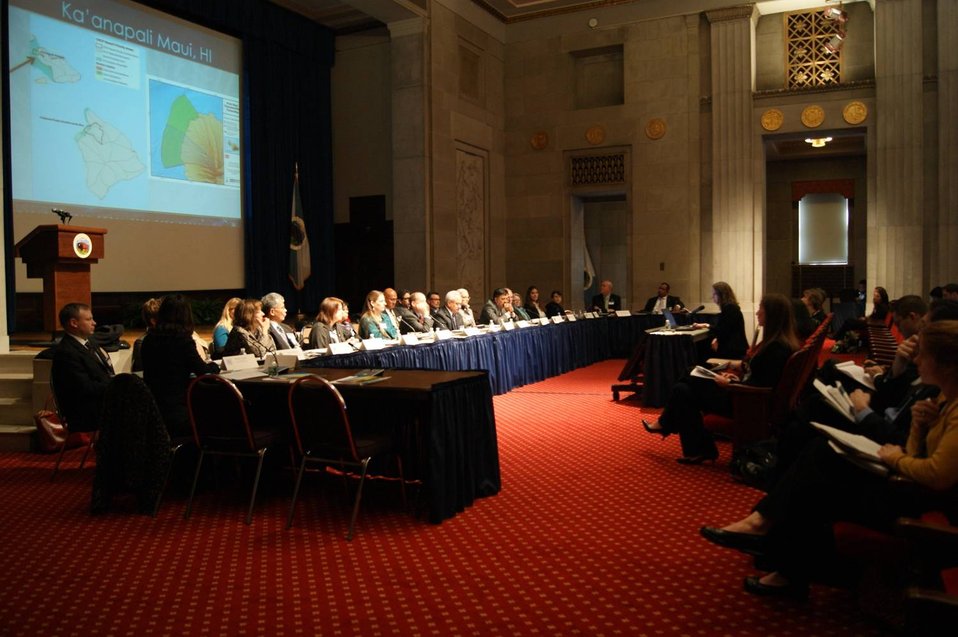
Coral Reef Task Force - Winter Meeting 2012